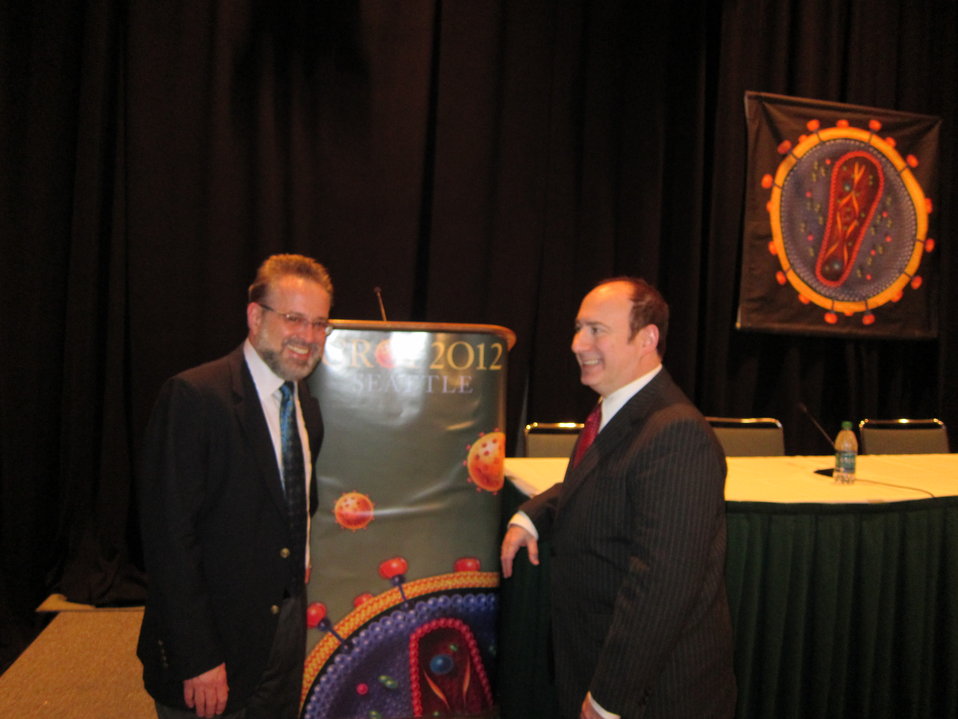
Drs V. and Horberg to be used for our podcast from CROI highlighting a PACHA member